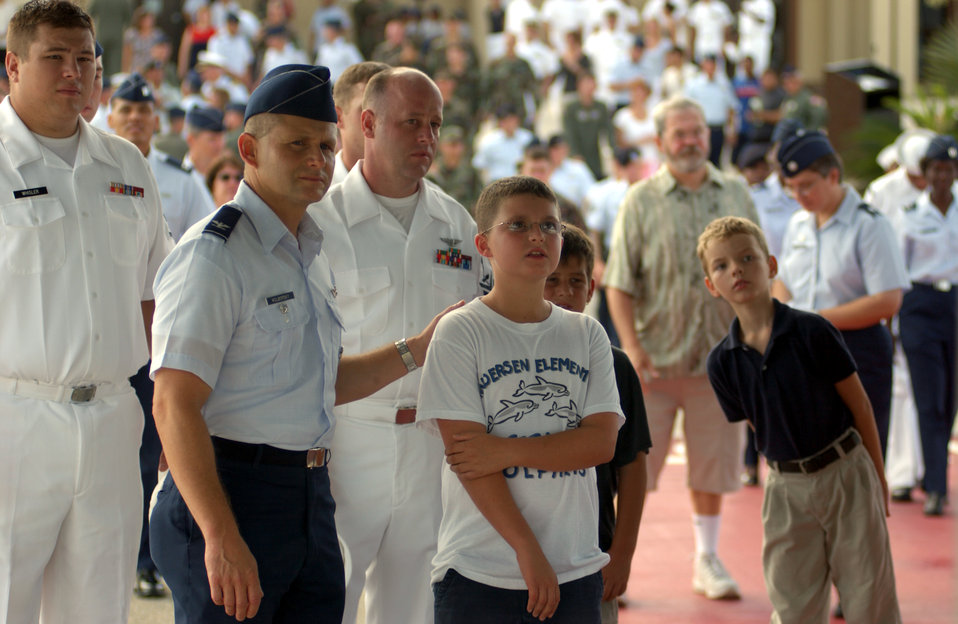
Airmen pay respect during repatriation ceremony

ANDERSEN AIR FORCE BASE, Guam -- Col. Stephen Woborski and his son peer into the rear of the Hanoi Taxi as they and people here pay respect to two fallen servicemembers who were repatriated to the United States on May 28. The Hanoi Taxi became the first C-141 Startlifter to repatriate American prisoners of war from Vietnam on Feb. 12, 1973. Colonel Woborski is the 36th Air Expeditionary Wing vice commander.